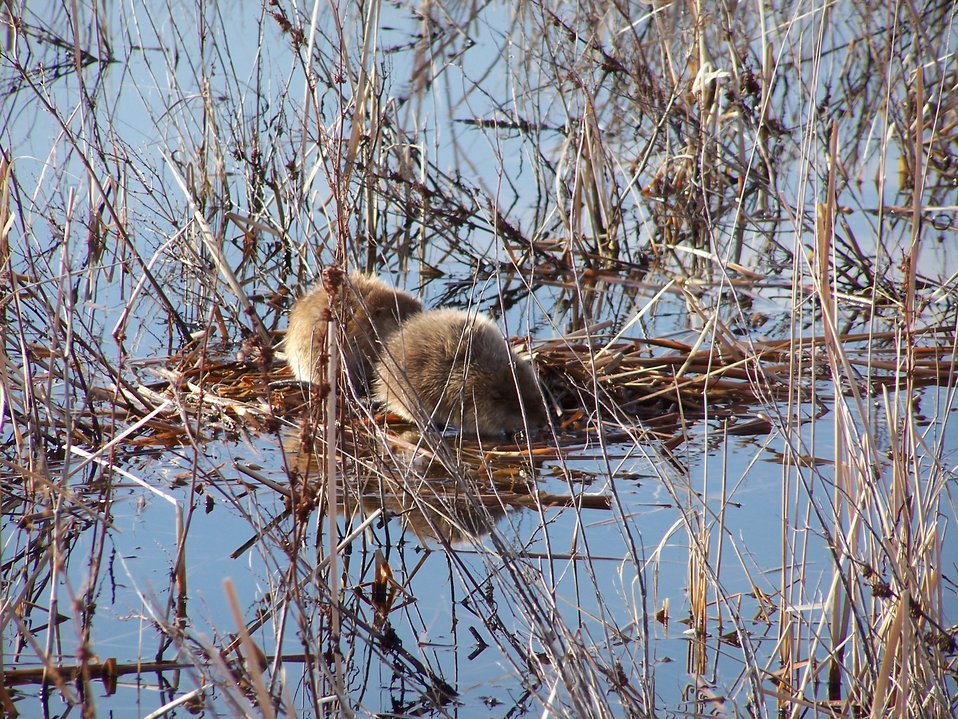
Muskrats on Bowdoin NWR